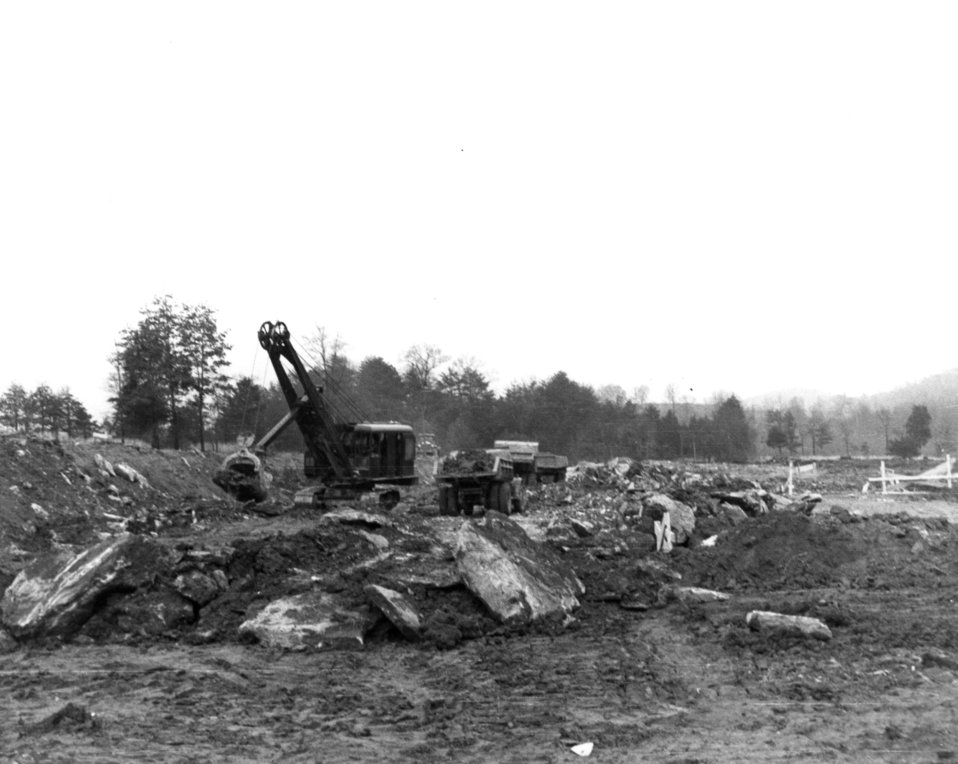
Construction activity at Oak Ridge